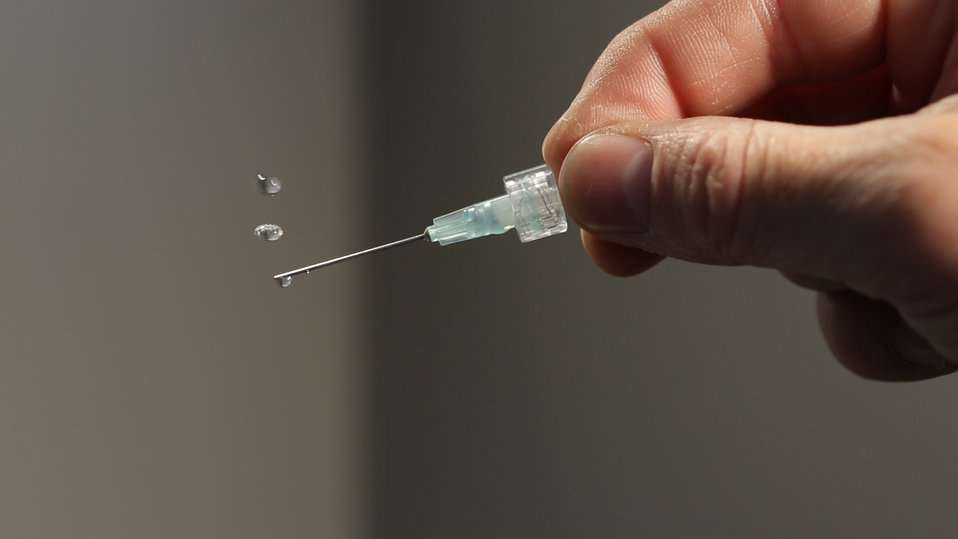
October 19, 2012: Acoustic Levitation for Medicine

This acoustic levitator was originally developed to help NASA simulate microgravity conditions, but now, scientists are using this piece of equipment to study pharmaceutical solutions at the molecular level. At Argonne National Laboratory, droplets are suspended in air between two sets of speakers, which generate sound waves at frequencies slightly above the audible range -- about 22 kilohertz. Learn more about how acoustic levitation is performed and how it helps scientists study pharmaceuticals here.